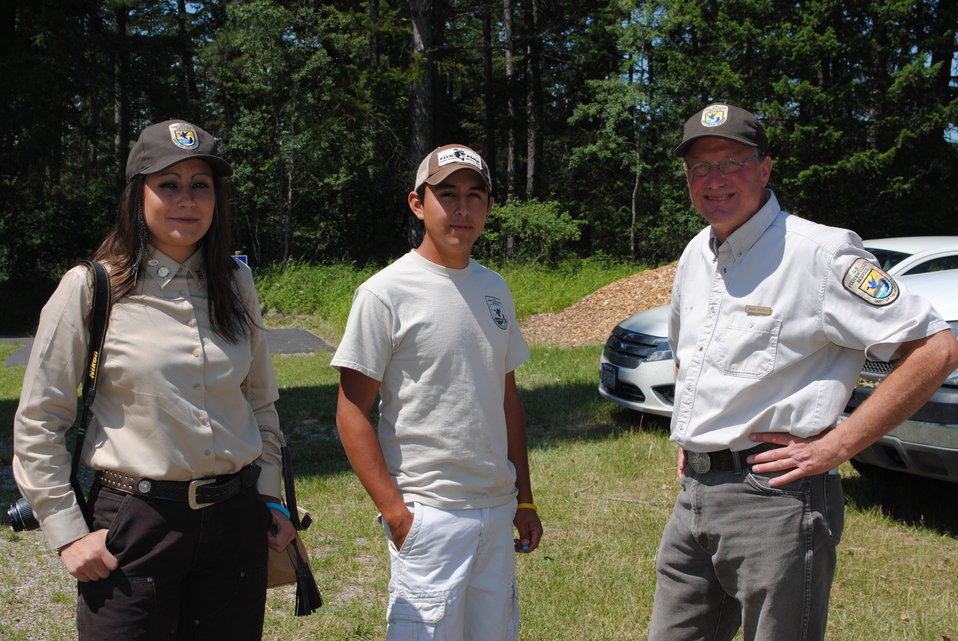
Northwest Montana Native YCC Crew Leaders Amanda and Austin, with Mark Maskill

Mark Maskill (Project Leader at Creston NFH): “It was wonderful having Secretary Salazar and Director Ashe at Creston National Fish Hatchery today. It was a beautiful day here in Kalispell, MT, and the groups we had assembled, the Northwest Montana Native Youth Conservation Corps and the Montana Conservation Corps with Americorps, these are programs that highlight youth in the outdoors, learning outdoor skills and advancing future careers. Secretary Salazar and Director Ashe talked to the group about careers with the Fish and Wildlife Service and also gave the kids special attention which enthused them, and really fired them up, gave them a sense of worth. The kids appreciated the visit and that the Secretary and Director took time out of their very busy schedules to meet with them, asking questions and learning more about their programs.”